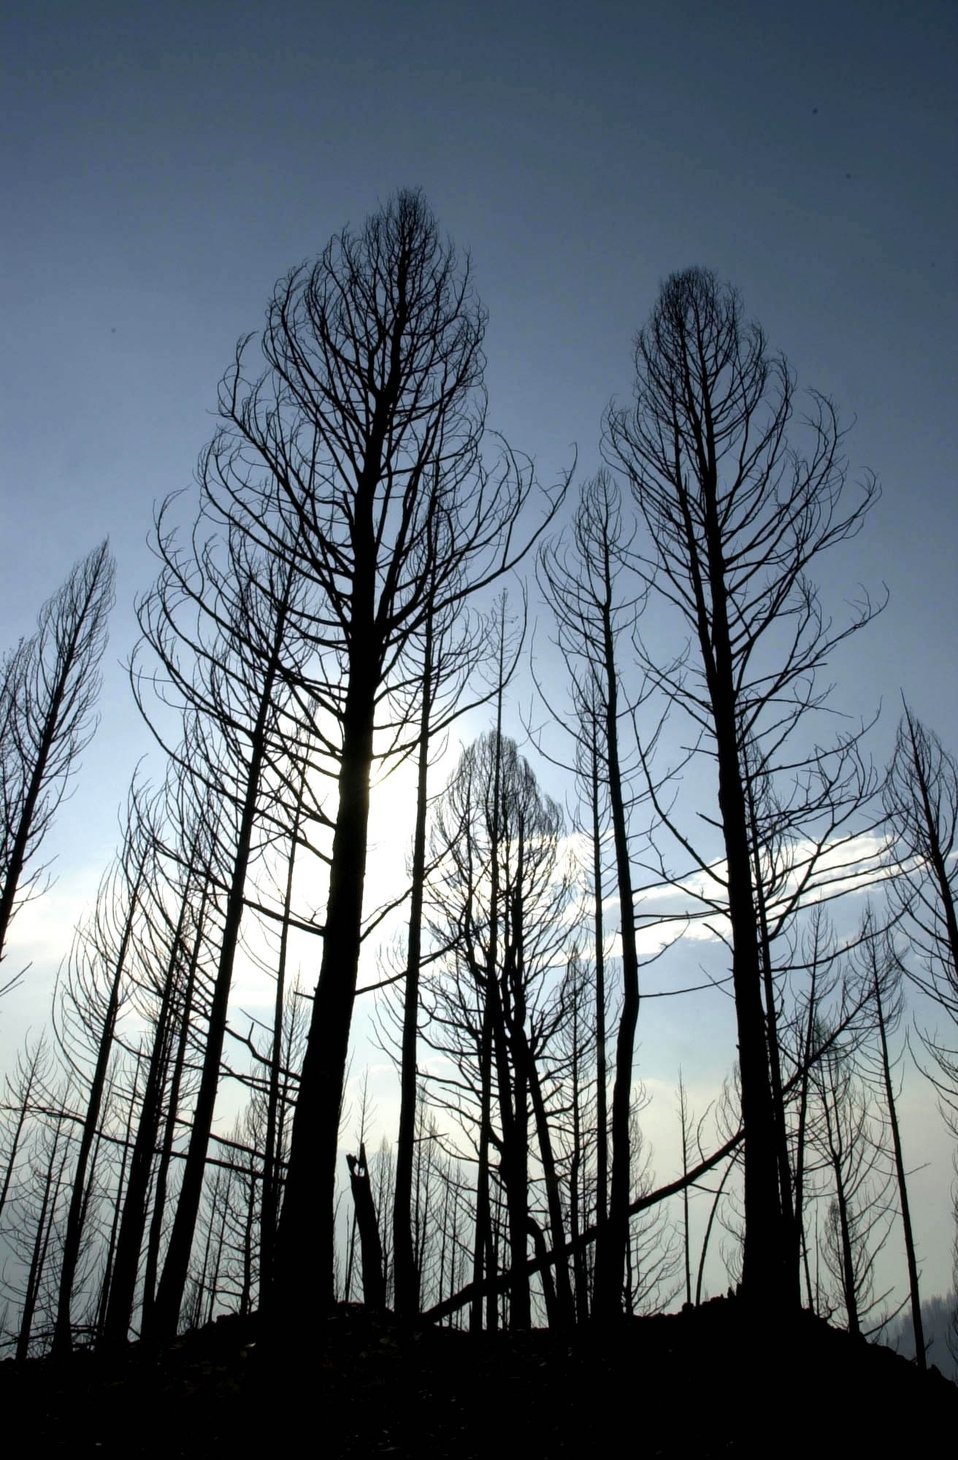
Burned trees Fire Clearwater Fire Salmon Field Office USRD Upper Snake River District